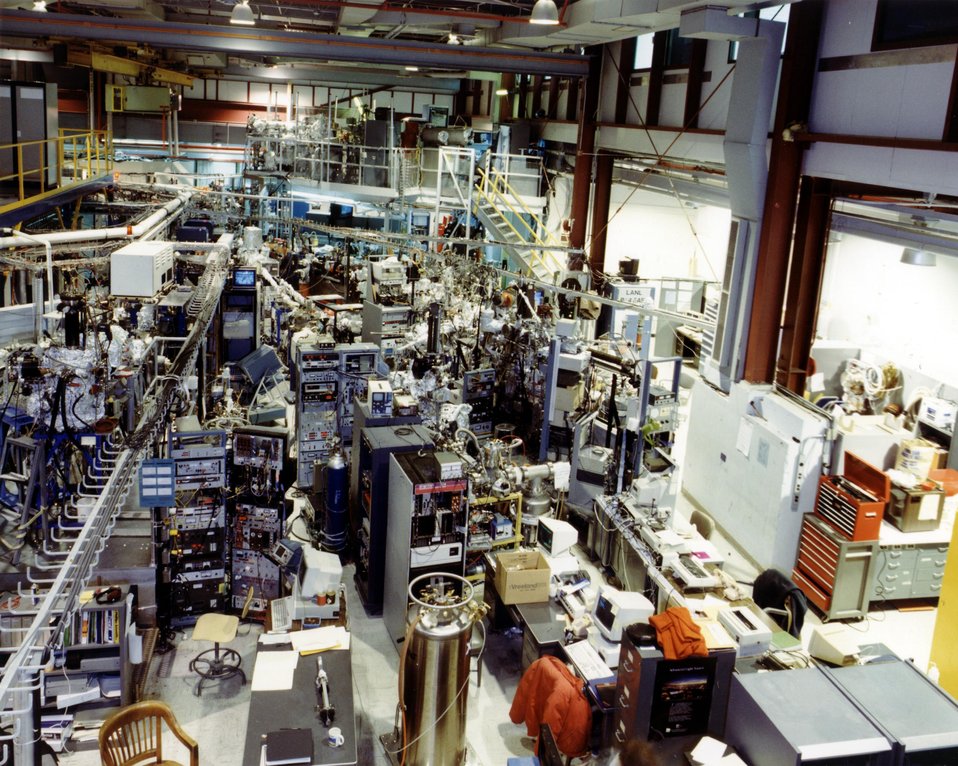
VIEW OF THE EXPERIMENTAL FLOOR OF THE ULTRAVIOLET RING.